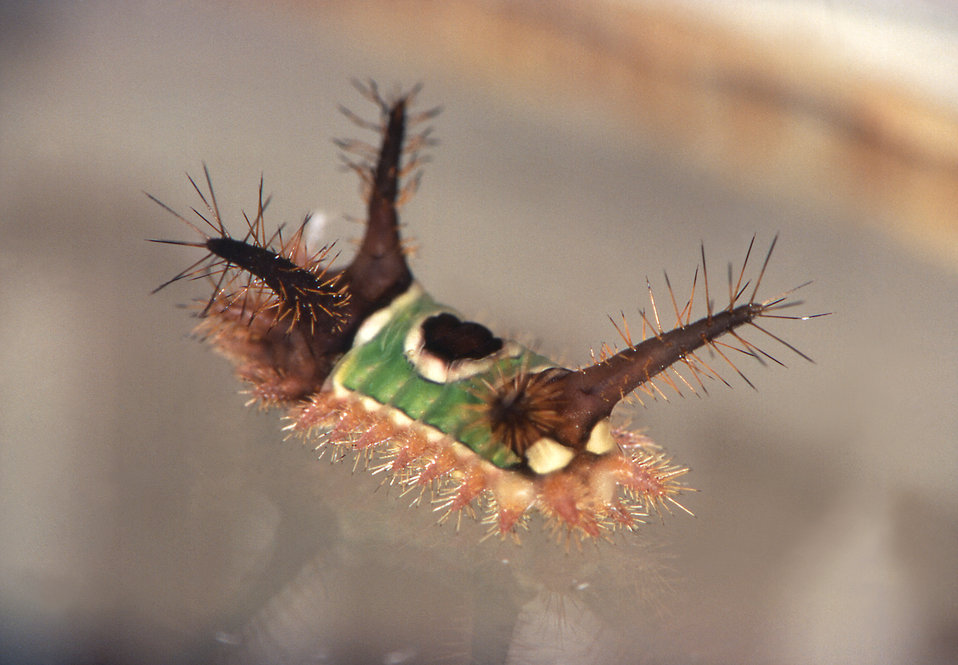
This is an oblique view of a saddleback caterpillar, Sibine stimulae, an urticating, or hive-producing caterpillar.